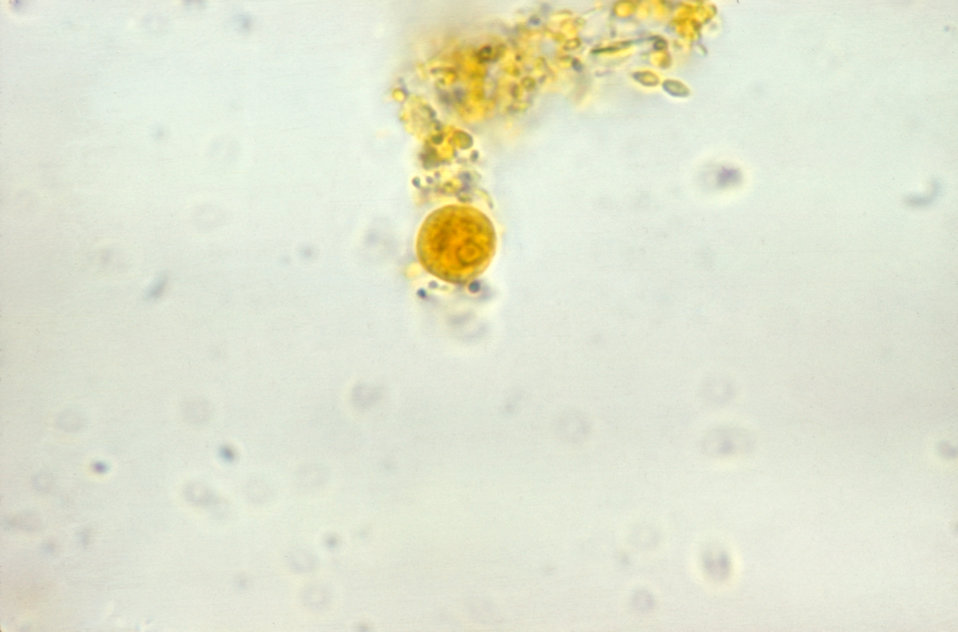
Entamoeba hartmanni.